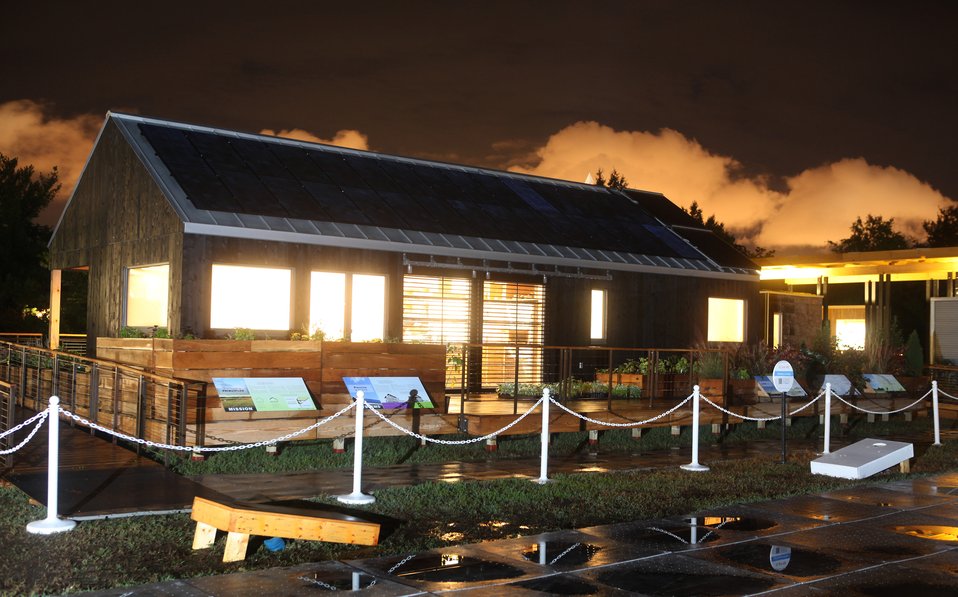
Middlebury College entry at the U.S. Department of Energy Solar Decathlon, Washington, DC, September 23, 2011. (Credit: S.Paltera/ U.S. DOE / Solar Decathlon)
The Solar Decathlon is a competition that challenges college and university teams from around the world to design, build, and operate solar-powered houses that are affordable, highly energy efficient, attractive, and easy to live in. The 2011 teams and their houses represented a broad range of design solutions, geographic locations and climate, and were targeted toward urban, suburban and rural settings. The houses were intended for different housing markets, including lower-income, disaster relief, retirement, and single family.